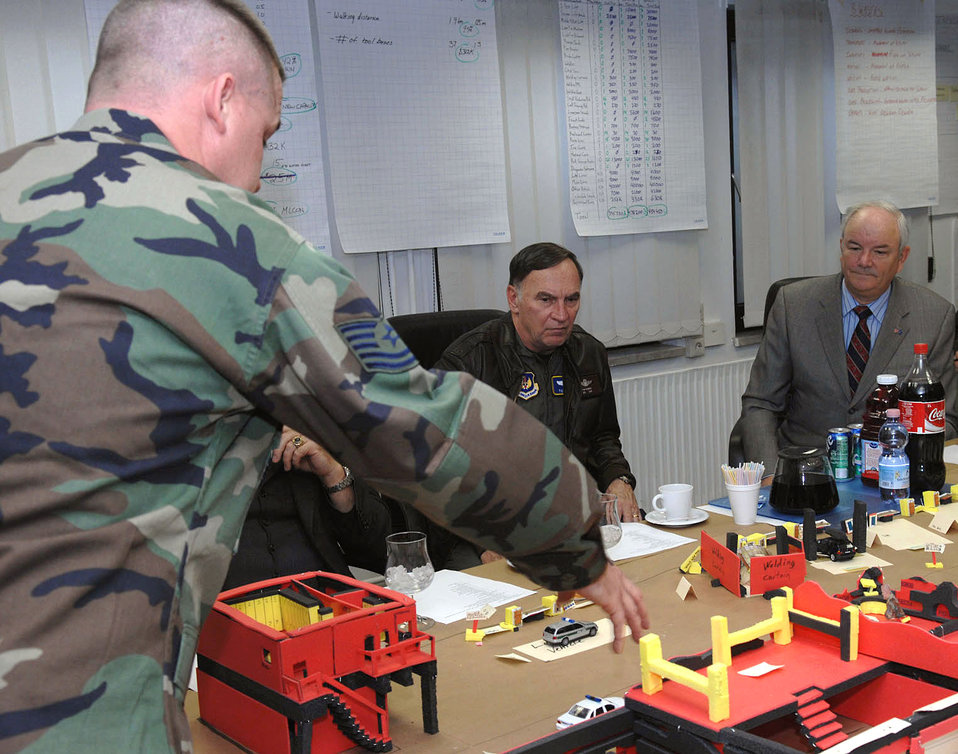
SECAF USAFE VISIT

Tech.Sgt. Benjamin Parish explains improvements proposed for the 435th Vehicle Readiness Squadron to Secretary of the Air Force Michael Wynn and Gen. William T.Hobbins the U.S. Air Forces in Europe commander. The SECAF made a visit to USAFE Dec. 12 at Ramstein Air Base, Germany.